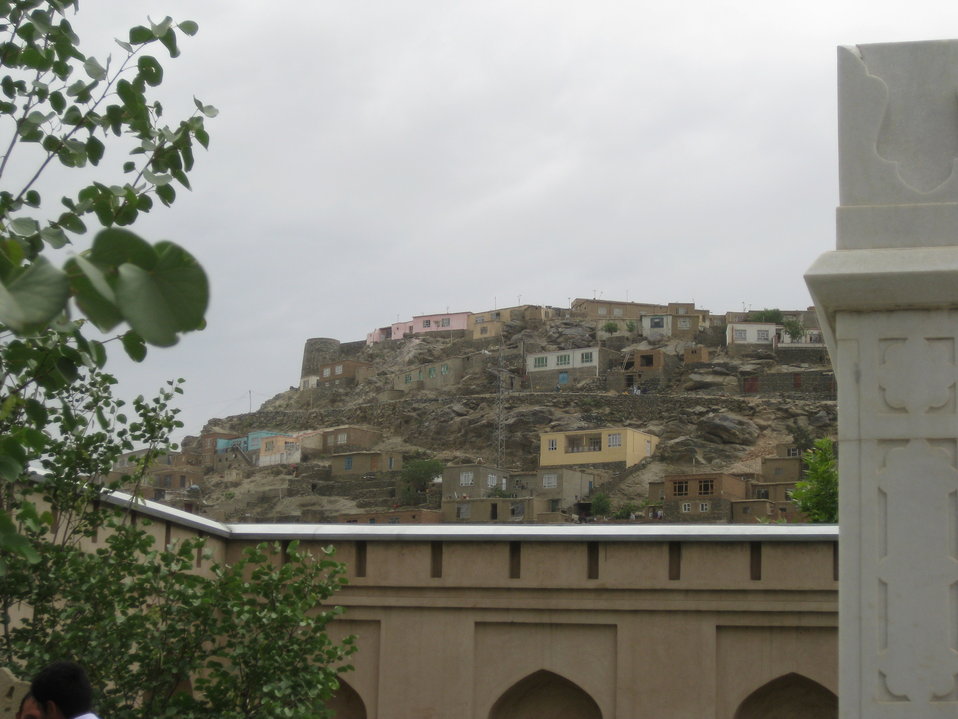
Afghan Youth Voices 100